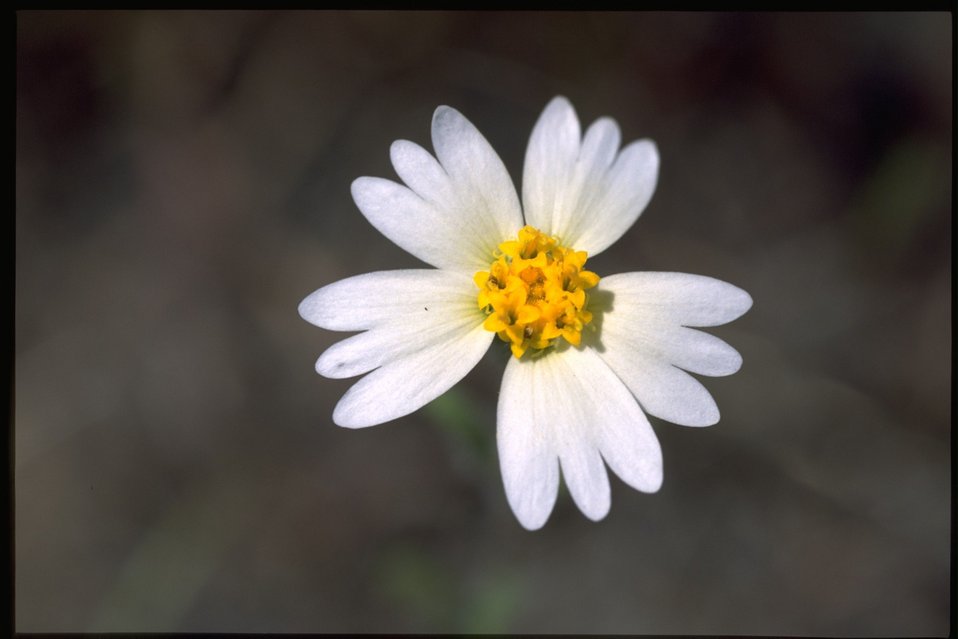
Closeup shot of Asteraceae.